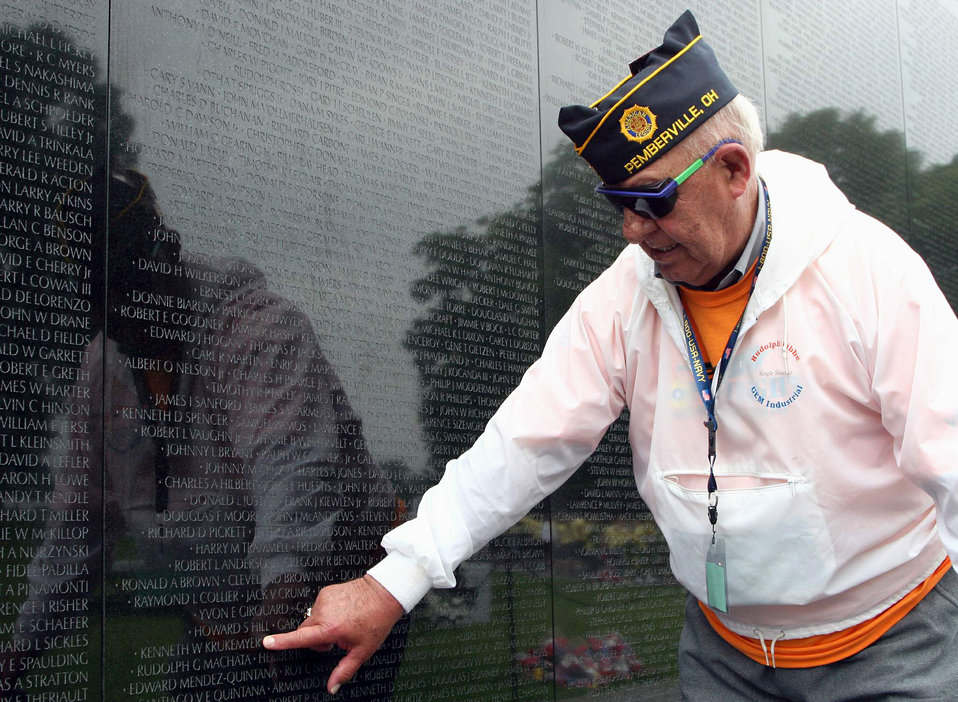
Servicemembers join World War II vets at National Mall

Douglas Wegman stops at the Vietnam Veterans Memorial to point out the name of a friend, Kenneth W. Krukemyer, who died during the conflict May 27 in Washington, D.C. Mr. Wegman is a veteran of World War II and the Korean War who made the trip to see the veterans' memorials as part of Honor Flight Northwest Ohio.